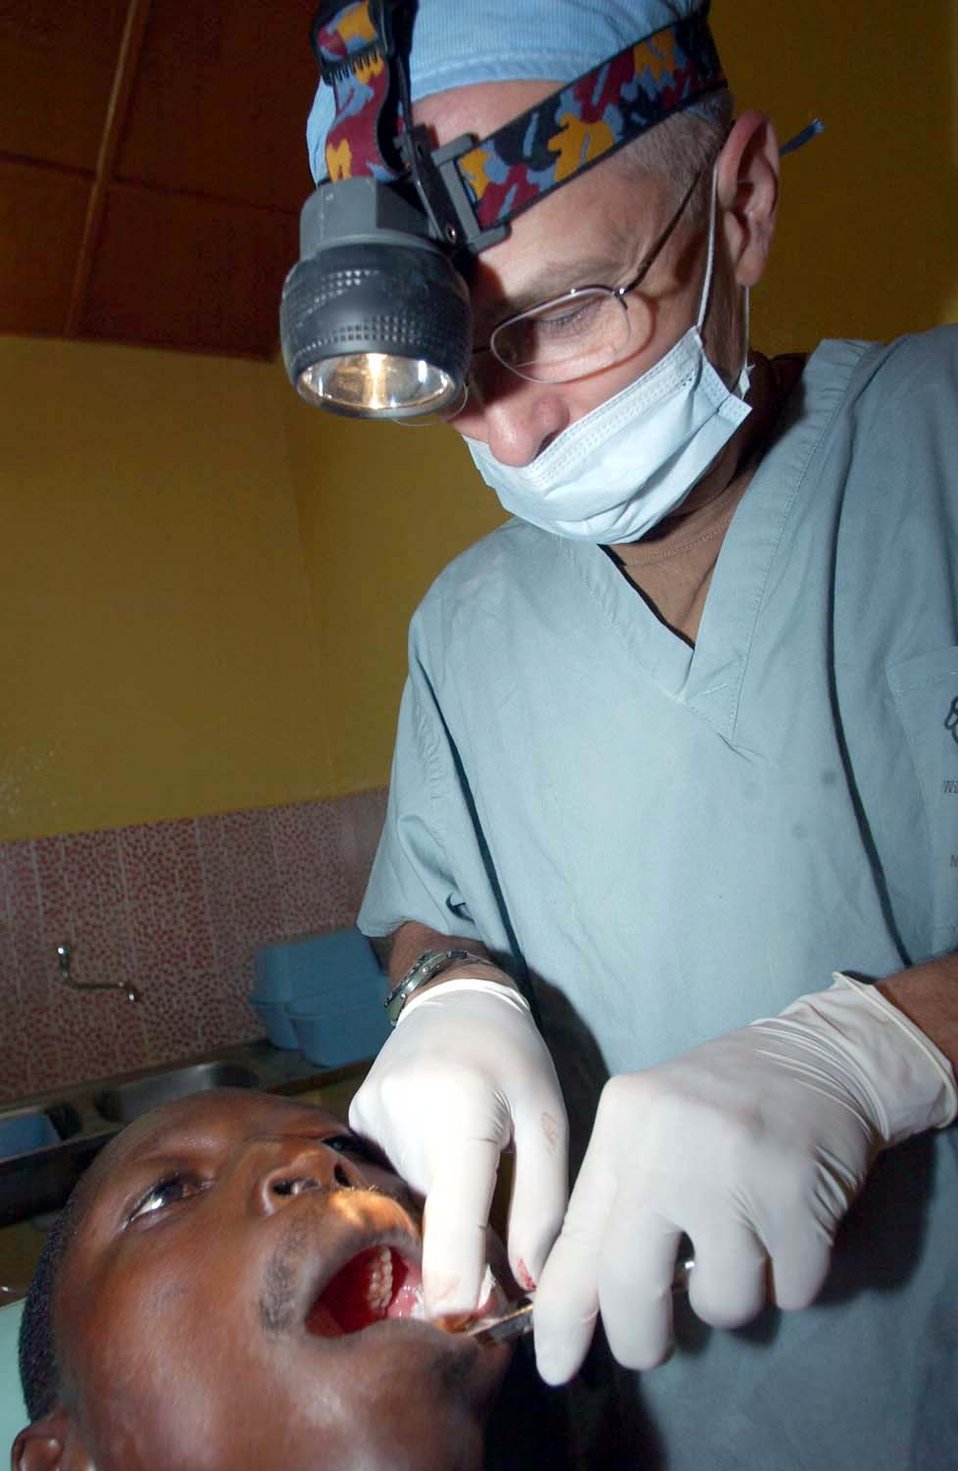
Extraction

CAMP TONDIBIAH, Niger -- Lt. Col (Dr.) Victor Brown prepares to extract a tooth from a Nigerian man. Dr. Brown is a dentist from Niagra Falls, N.Y. He is one of 12 medical specialists from Air Force Reserve Command who are here on a humanitarian mission.